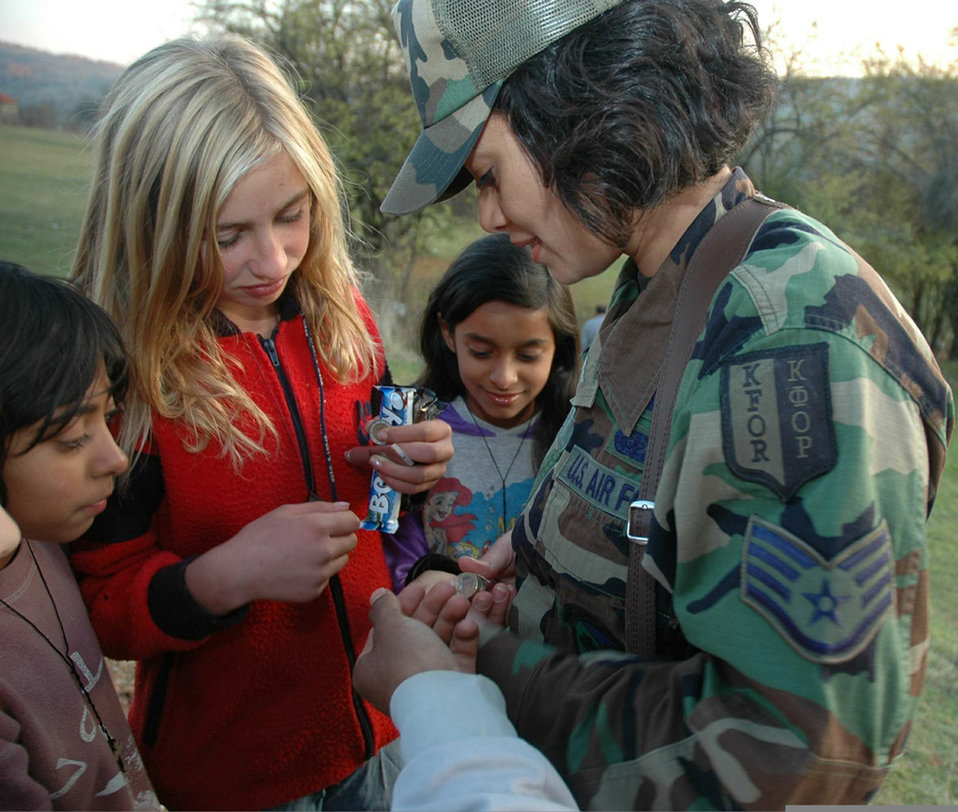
Humanitarin mission

NOVO BRDO, Kosovo (AFPN) -- Children gather around Staff Sgt. Shannon Millard as she hands out coins and candy during a humanitarian mission in the Novo Brdo region of Kosovo. Shannon Millard is a contract specialist deployed from Cannon Air Force Base, N.M.